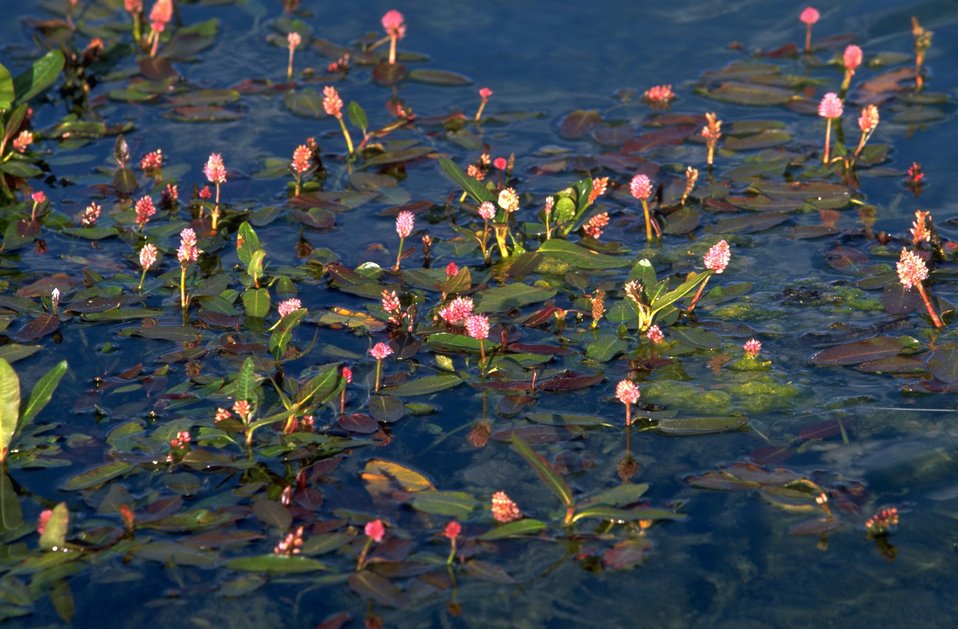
Blooming Lillies in Axolotl Lake, near Virginia City